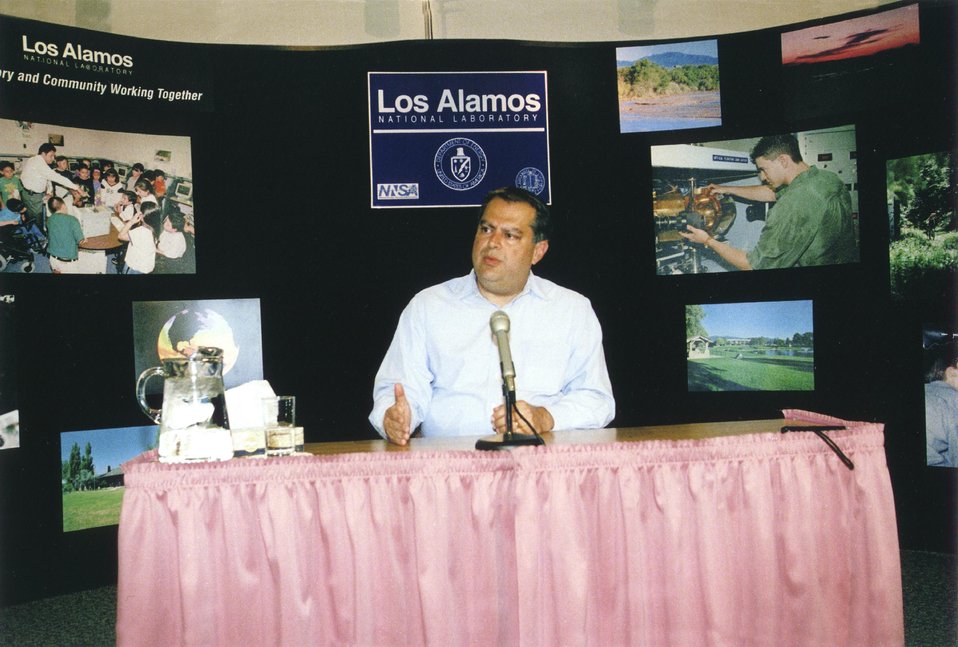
SECRETARY OF ENERGY SPENCER ABRAHAM AT PRESS CONFERENCE AT OPPENHEIMER STUDY CENTER, LANL.